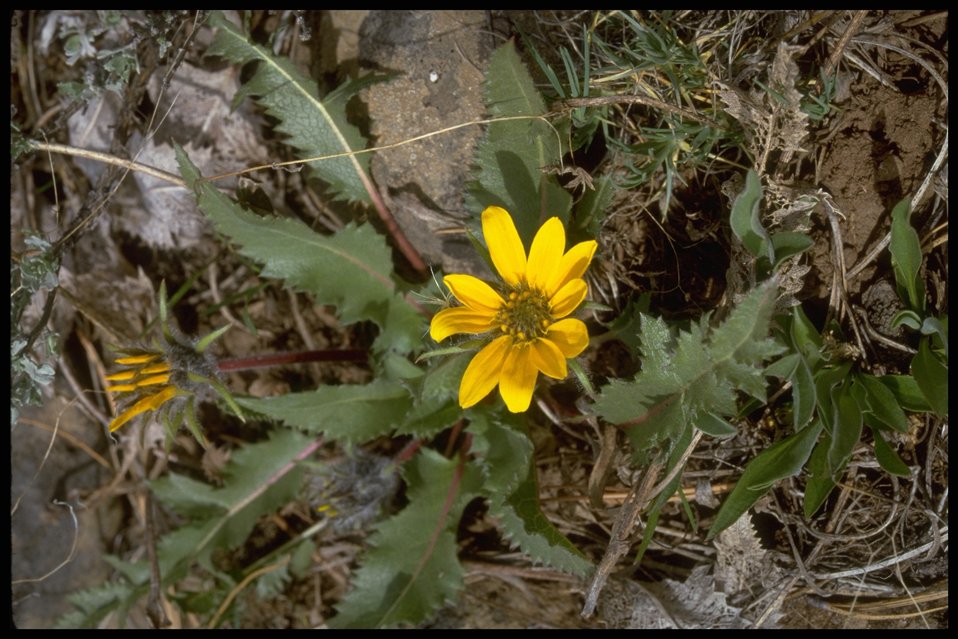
Medium shot of Serrate Balsom habitat.